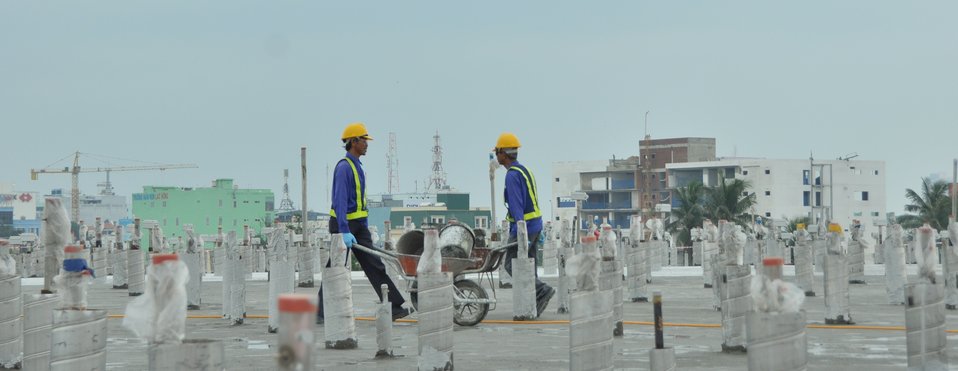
USAID Dioxin Contamination Project Progress: Containment Structure

Progress at the Environmental Remediation of Dioxin Contamination Project at the Danang Airport

December 4, 2013